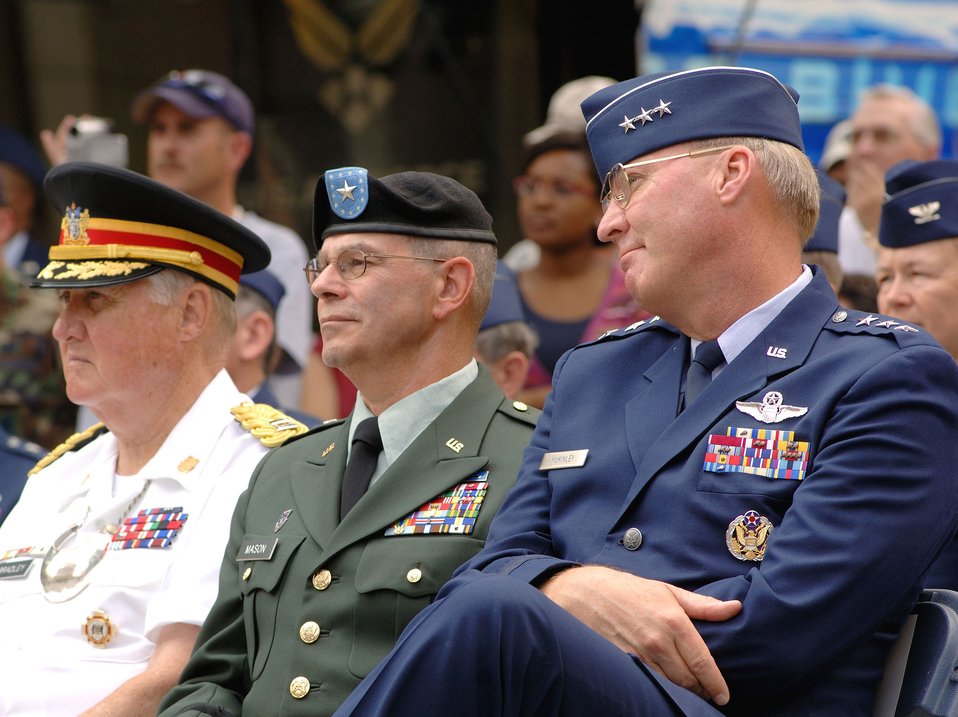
Boston proclamation party gets Air Force Week rolling

(From left) Capt. John E. Bradley, Brig. Gen. Oliver J. Mason Jr. and Lt. Gen. Craig R. McKinley watch members of the U.S. Air Force Honor Guard Drill Team perform their 16-man routine during a proclamation ceremony for Air Force Week New England in front of historic Faneuil Hall in downtown Boston Aug. 17. Captain Bradley is the captain commanding of the 299th Artillery Company of Massachusetts and Proclamation Reception Host. General McKinley is director of the Air National Guard.